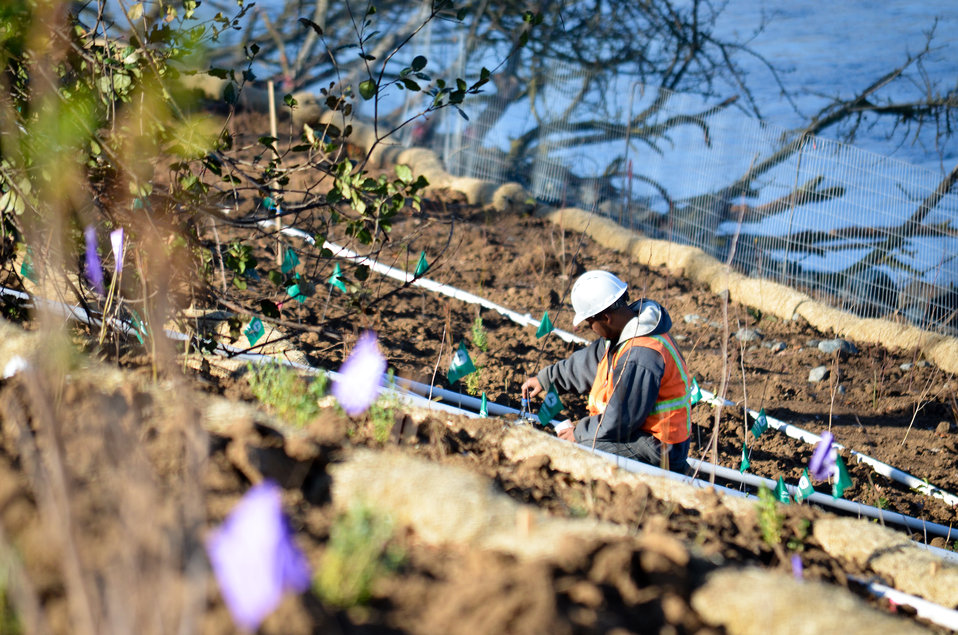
Corps contractor tags one of 6,785 total plants

A U.S. Army Corps of Engineers contractor tags one of the 3,696 plants, comprised of 14 native species, being planted and cared for during the final phase of river-bank erosion repairs along the American River’s south bank in Sacramento, Calif., Jan. 4, 2012. A total of 6,785 plants at two erosion sites within one-half mile of each other will be nourished for at least three years by a river-water irrigation system, while a waist-high fence will guard against beavers and other animal populations until the plants can sustain themselves.The plants were placed more than 15 feet away from the levee to comply with U.S. Army Corps of Engineers safety standards for vegetation on levees, improving river habitat without compromising levee stability. It’s all part of the Sacramento River Bank Protection Project, a joint effort between the Corps’ Sacramento District and Central Valley Flood Protection Board to reduce flood risk by maintaining levees and reducing stream bank erosion along the Sacramento River and its tributaries.